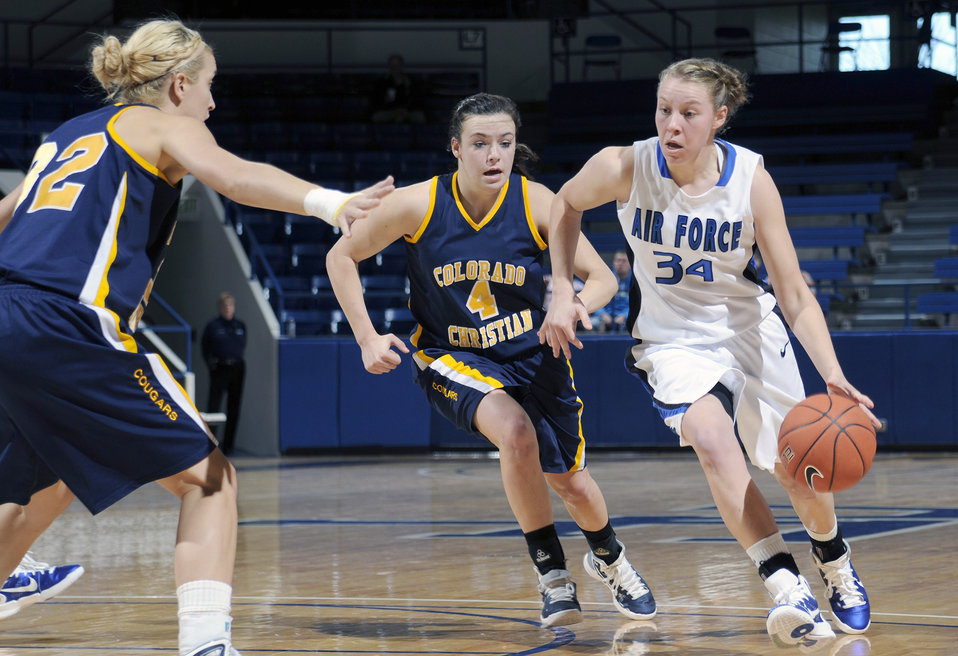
Women's basketball team defeats CCU Lady Cougars

Falcon sophomore forward Kelsey Berger drives around Lady Cougar Christina Whitelaw as the Falcons defeated Colorado Christian University 68-58 at Air Force Academy's Clune Arena in Colorado Springs, Colo., Nov 28, 2010.